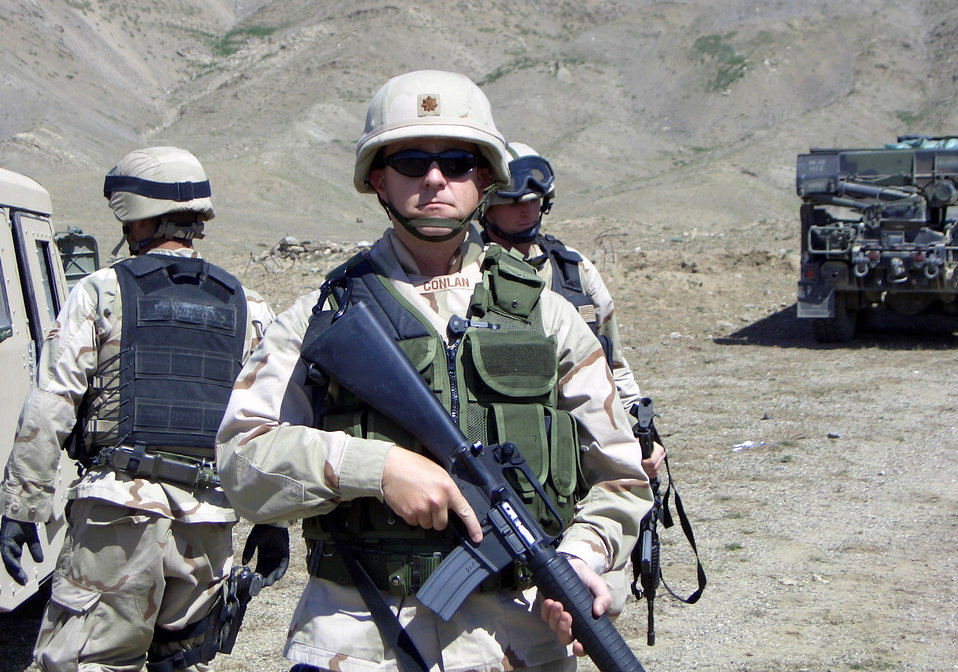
An Airman's road to wellness

Maj. Mathew Conlan pauses for a photo prior to leaving for an explosive ordnance team mission while deployed to Bagram Air Base, Afghanistan, June 17, 2005. Less than two hours later, Major Conlan was severely injured when a fellow team member stepped on an anti-personnel mine.